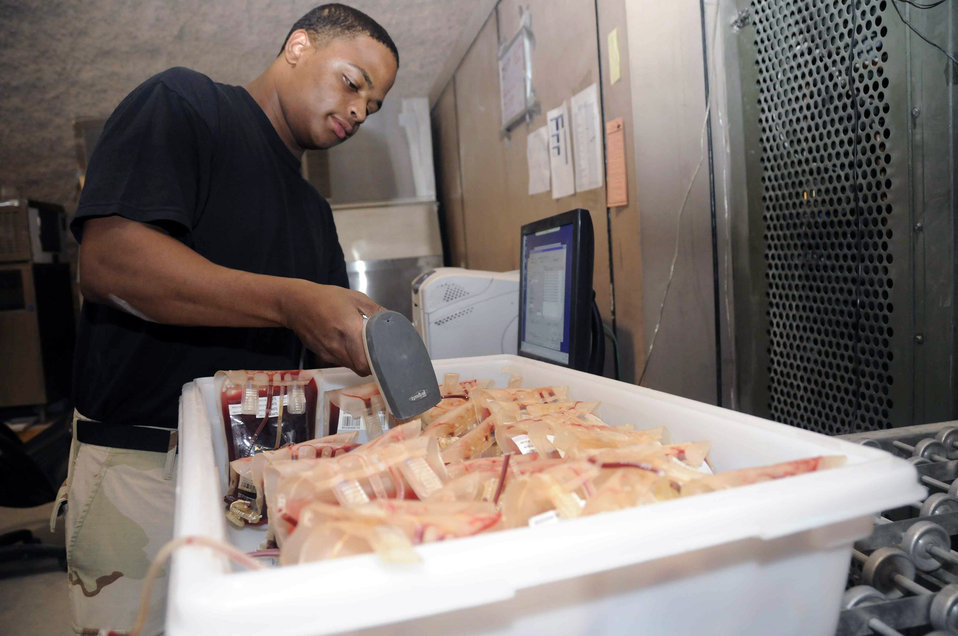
Bloodline for AOR

Senior Airman Garrett Olivier scans red blood cells May 6 at the Blood Transshipment Center in Southwest Asia. The blood will be packed and sent to Bagram Air Base, in Afghanistan, in support of injured coalition forces. Airman Olivier is a BTC lab technician with the 379th Expeditionary Medical Group.